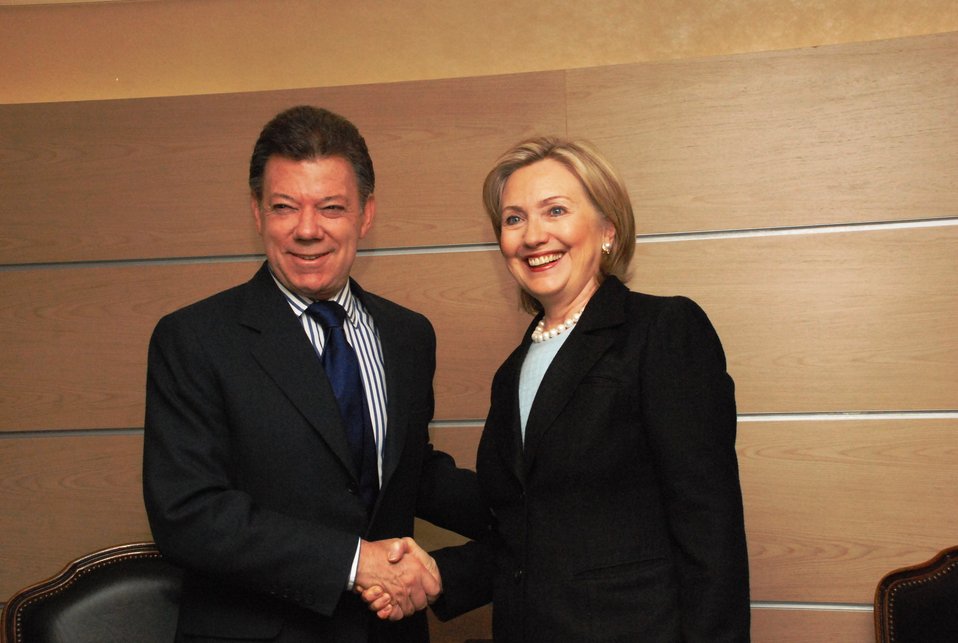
Secretary Clinton Shakes Hands With Colombian Presidential Candidate Juan Manuel Santos

U.S. Secretary of State Hillary Rodham Clinton shakes hands with Colombian Presidential Candidate Juan Manuel Santos to discuss issues of bilateral interest at the Hotel Charleston in Bogotá, Colombia, on June 9, 2010.